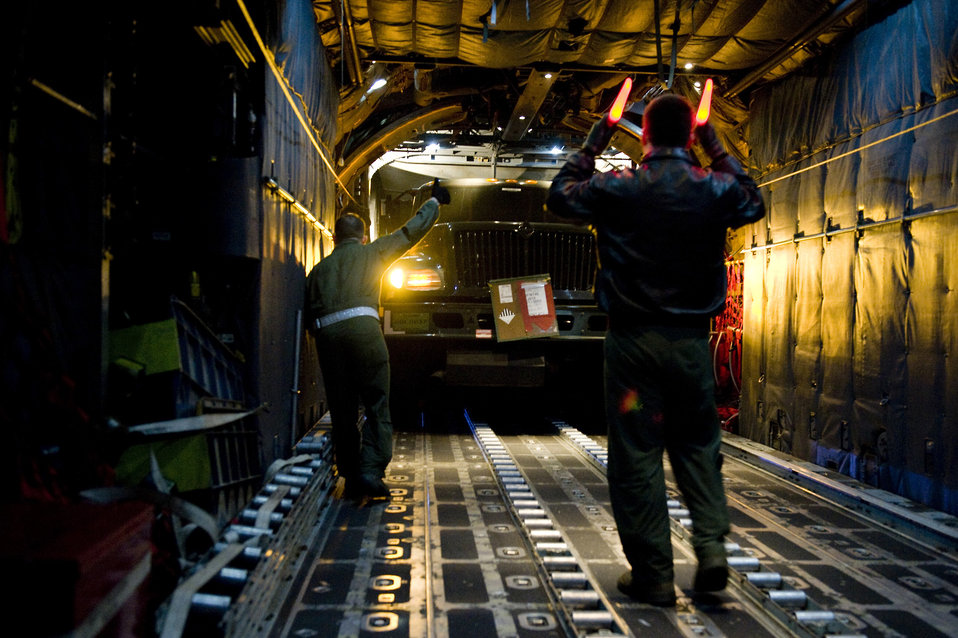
Yokota AB Airmen deliver fuels truck to aid Japan's relief efforts

Senior Airman Jason Barbieri, 36th Airlift Squadron, guides a fuels truck onto a C-130H Hercules here March 15. The fuels truck was taken to Yamagota Airport to support Japan's earthquake and tsunami relief efforts.